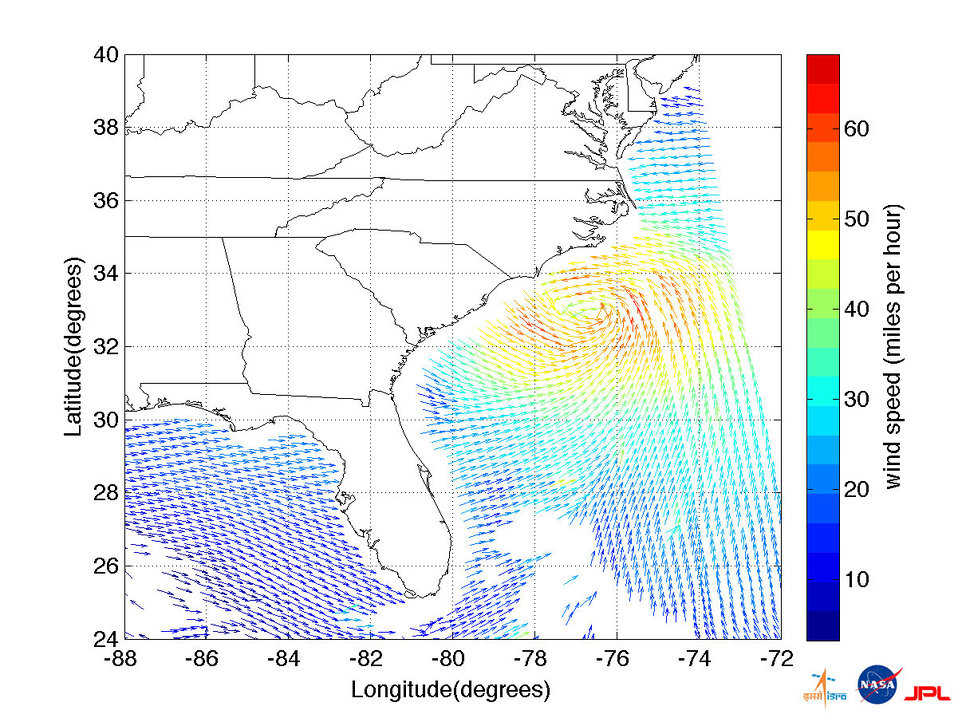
National Aeronautics and Space Administration, (NASA): Hurricanes/Tropical Cyclones